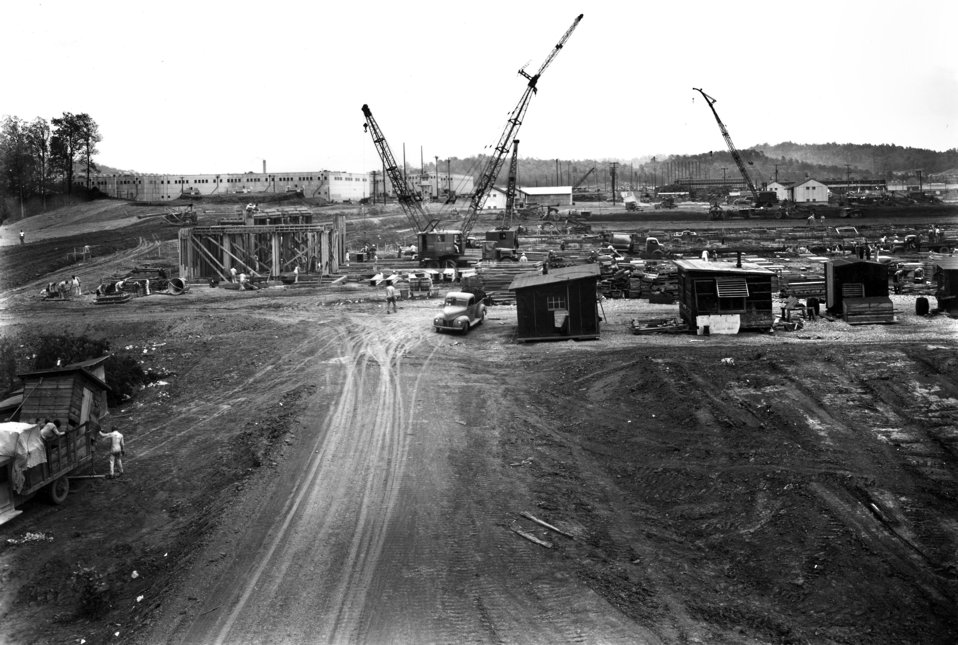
Construction of K-27 Oak Ridge

k-27-16 DOE photo by Ed Westcott Oak Ridge Tennessee 1940s